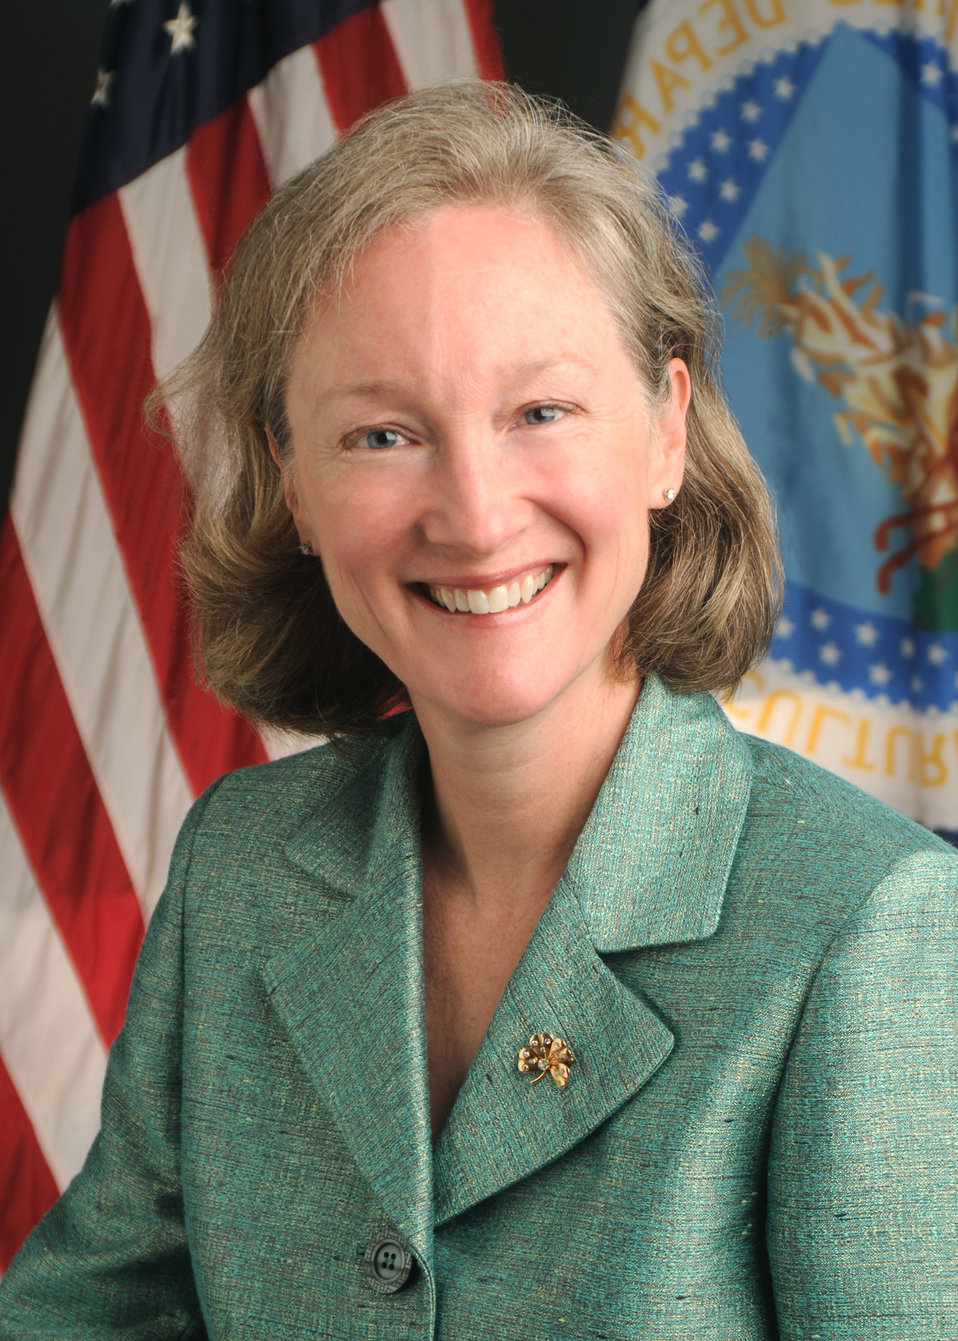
09di1113-002 Deputy Under Secretary for Marketing and Regulatory Programs (MRP) Ann Wright

Deputy Under Secretary for Marketing and Regulatory Programs (MRP) Ann Wright.